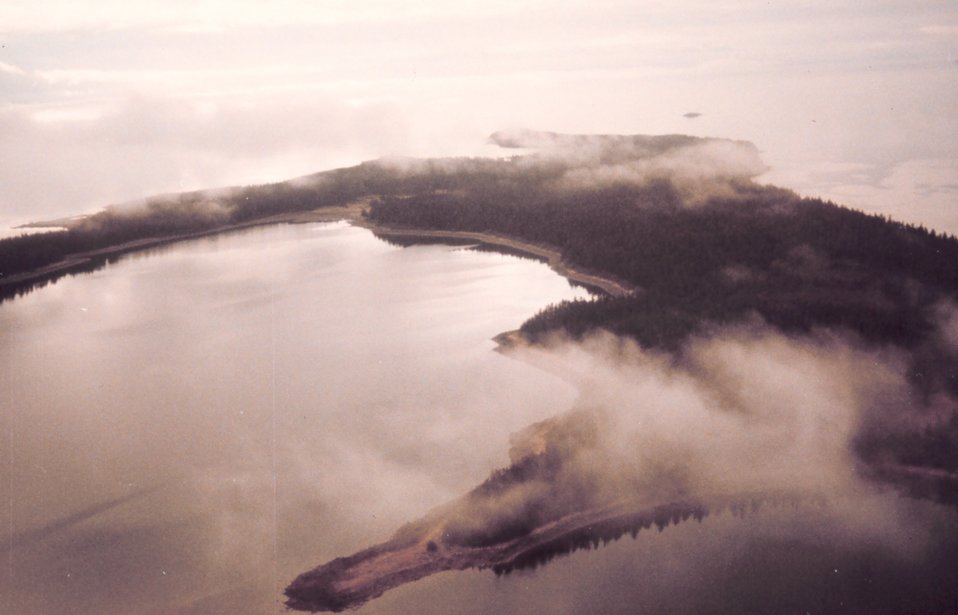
Flying near Hoonah